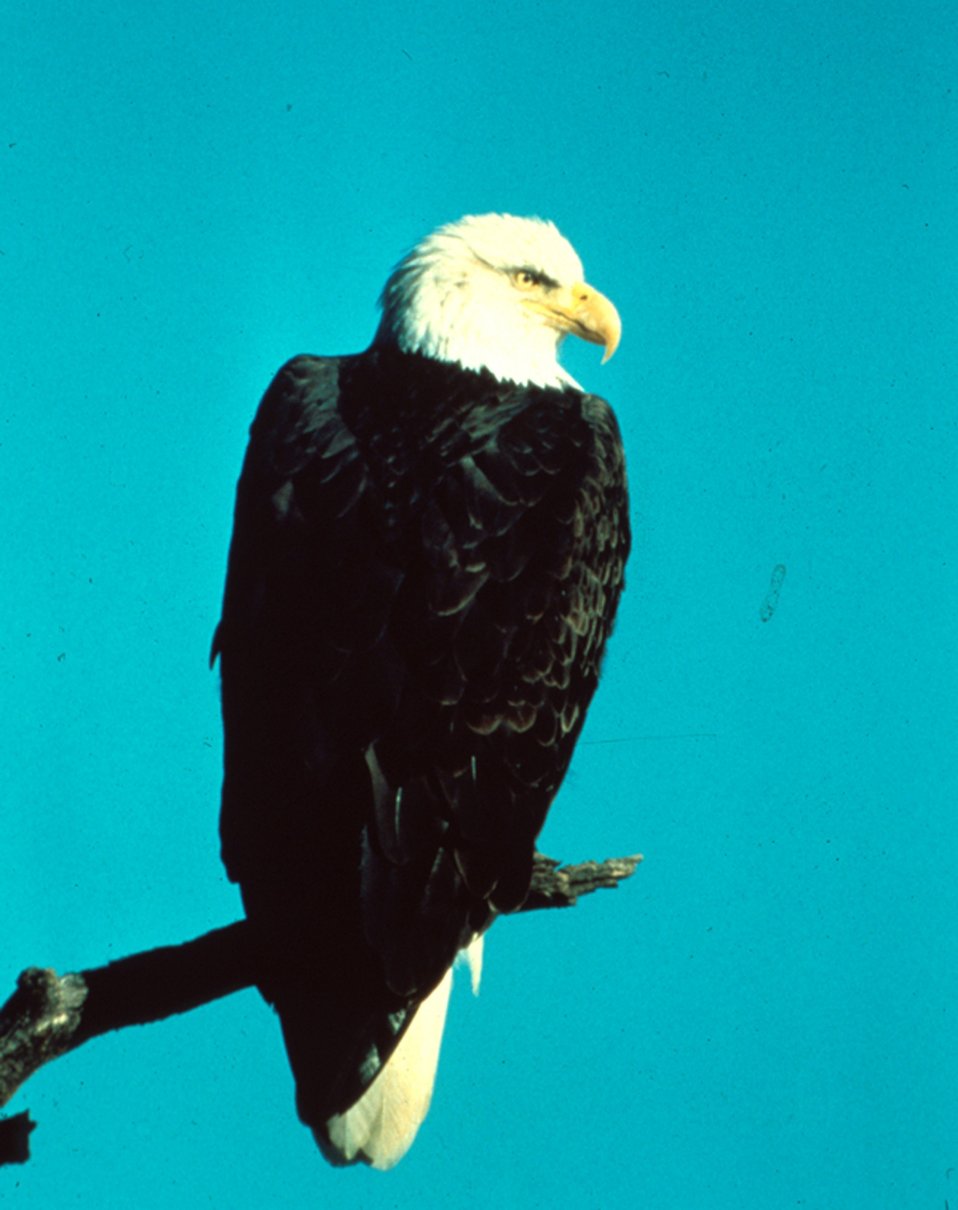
Bald Eagle Owyhee Field Office LSRD Lower Snake River District